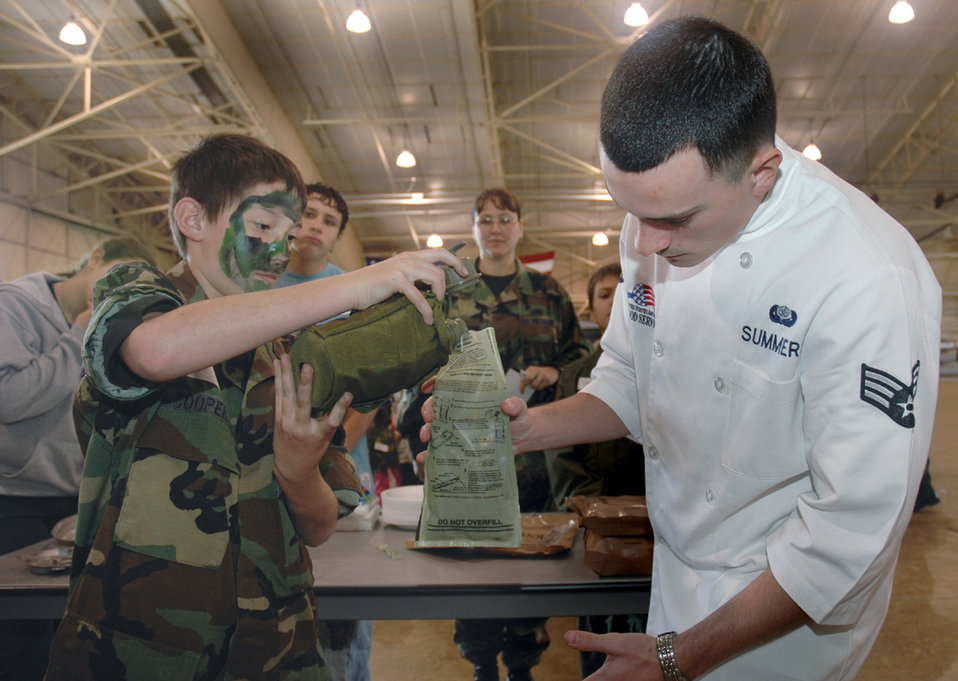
Children experience 'deployment' firsthand

TYNDALL AIR FORCE BASE, Fla. (AFPN) -- Trent Frey pours canteen water into a Meals, Ready to Eat heating container with the help of Senior Airman Jon Summer of the 325th Services Squadron.